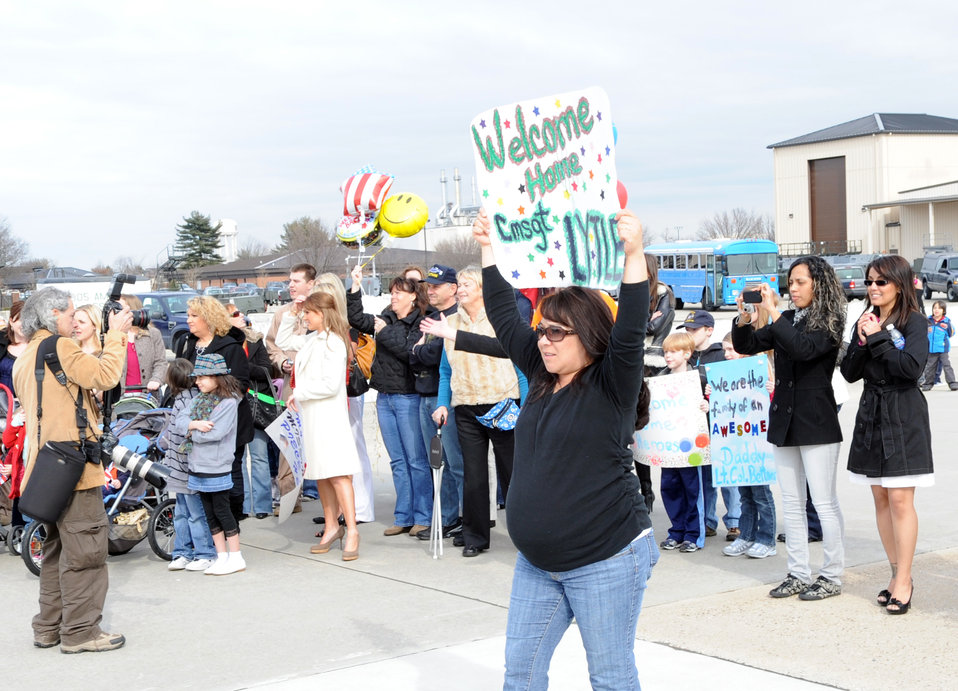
McGuire Airmen return from deployment

Family members and friends of the 6th Airlift Squadron welcome home 150 Airmen March 2, 2010, at Joint Base McGuire-Dix-Lakehurst, N.J. The squadron staff assumed the role and mission of the 817th Expeditionary Airlift Squadron when they deployed in October 2009 in support of operations Iraqi Freedom and Enduring Freedom.